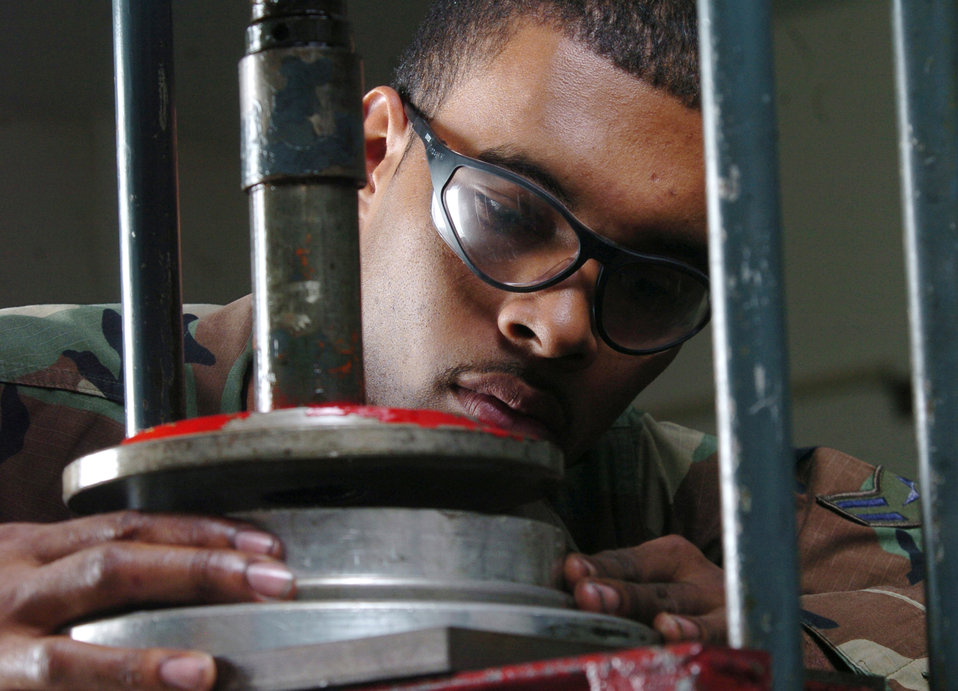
Start the presses

YOKOTA AIR BASE, Japan -- Airman 1st Class Willie Anderson sets up a hydraulic press to install shaft seals on a C-130 Hercules propeller assembly during an inspection here. He is a mechanic assigned to the 374th Maintenance Squadron at the T56 Engine Regional Repair Center here. The center handles all C-130 engine repairs in Pacific Air Forces.